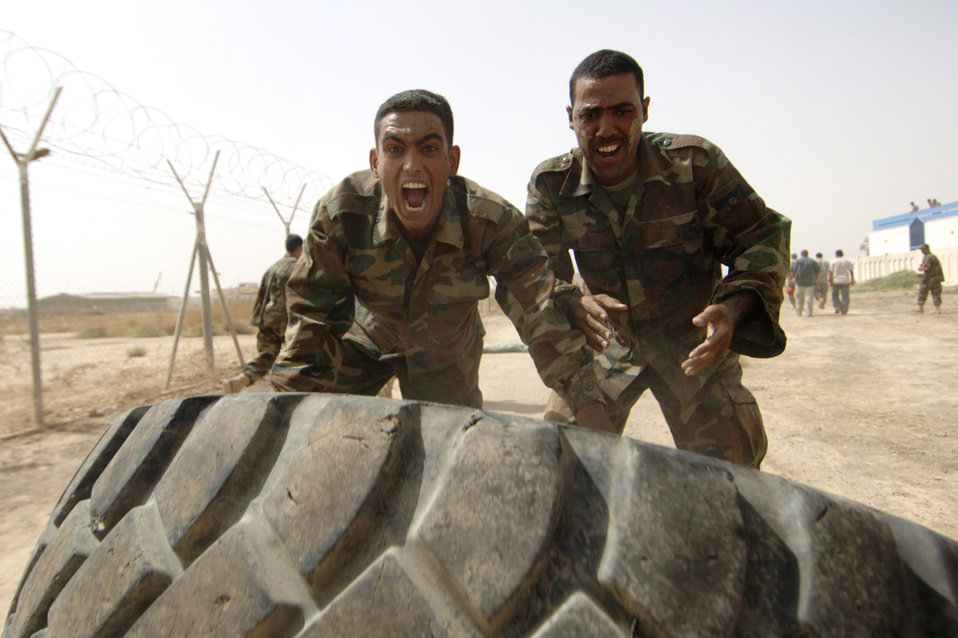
Training instructors build tactical course for Iraqi airmen

Iraqi warrant officers flip a tire during their run of the Iraqi air force basic military training tactical course at Al Taji Air Base, Iraq, Sept. 27. The tactical course tests their ability to work as a team and negotiate a variety of obstacles.